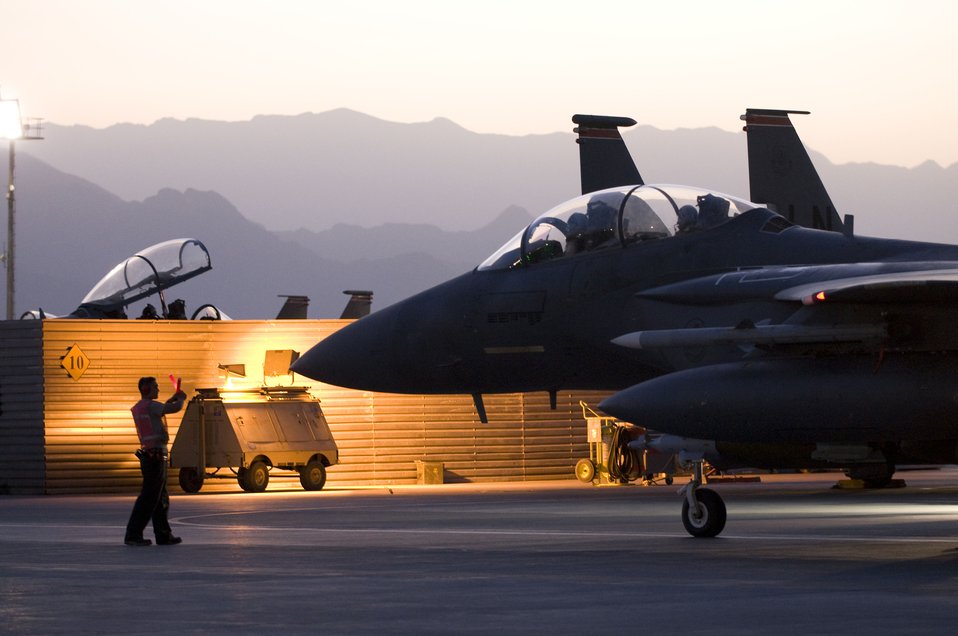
Strike Eagles fly dawn patrol

A crew chief with the 455th Expeditionary Aircraft Maintenance Squadron marshals a dawn patrol F-15E Strike Eagle at Bagram Air Field, Afghanistan, Aug. 27. The two F-15Es that made up the dawn patrol taxied out just as first light began to break over the picturesque mountains of Afghanistan.